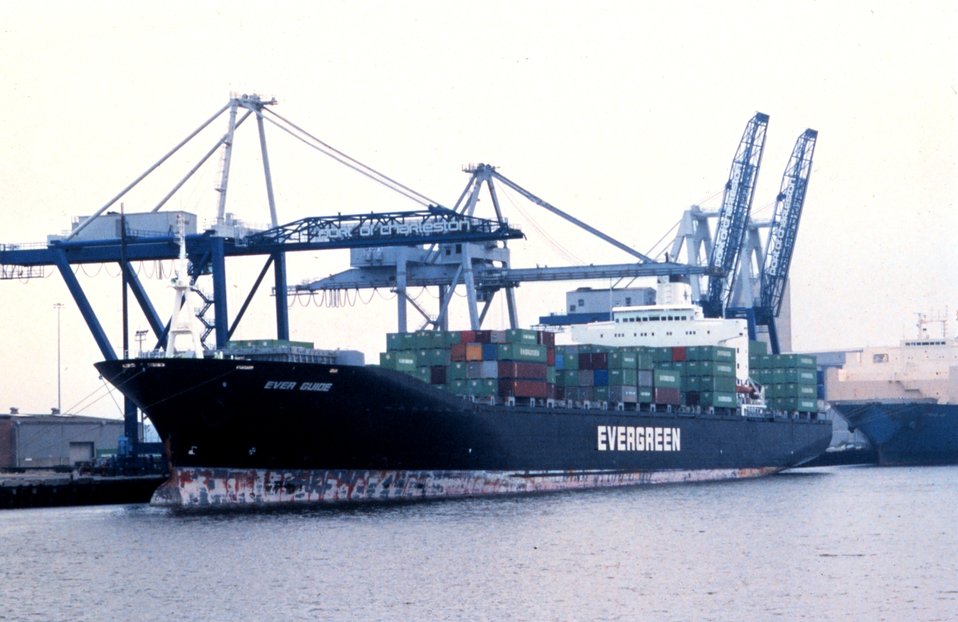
A containership at the Port of Charleston.